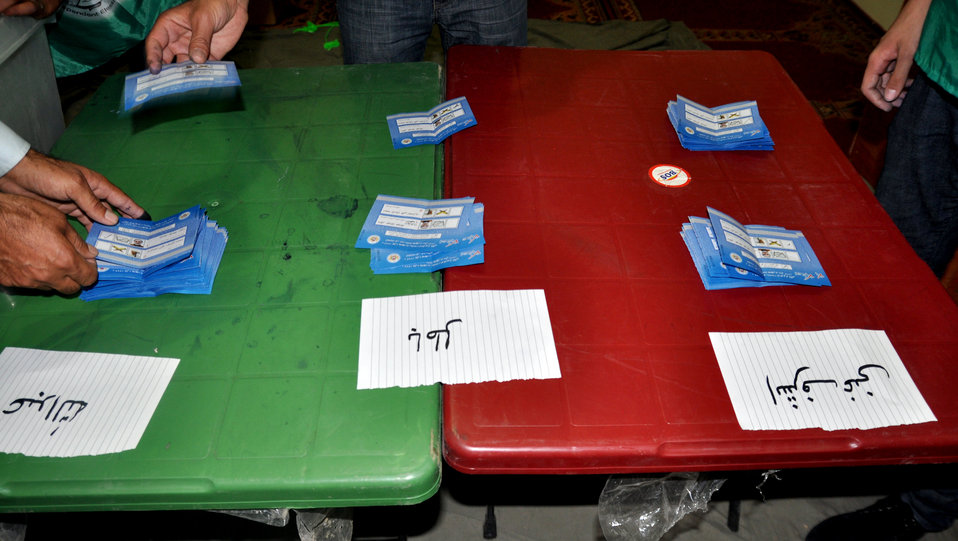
IEC workers count ballots in Kabul.